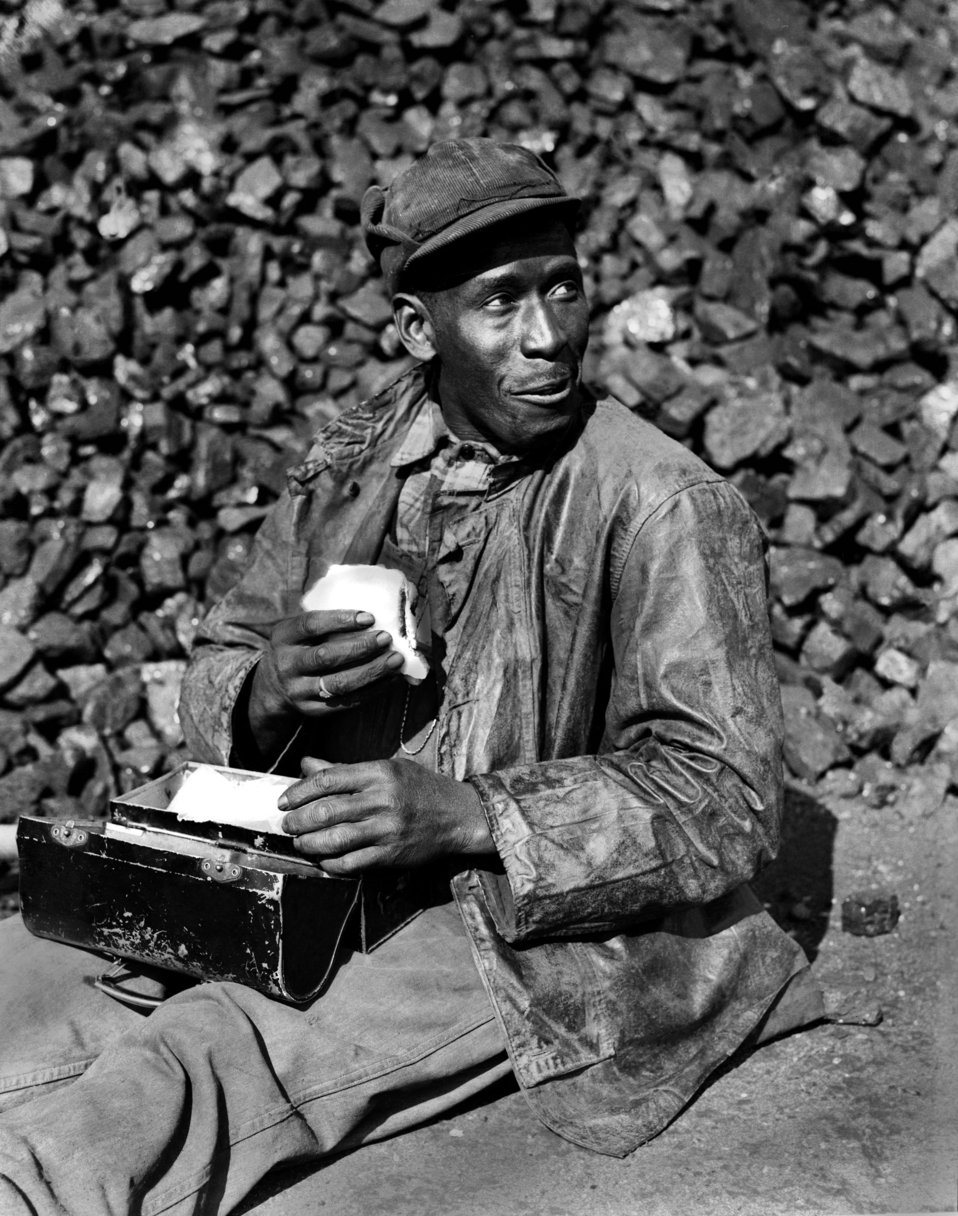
Coal Worker Coal Yard Oak Ridge

PRO-253a DOE photo by Ed Westcott

Coal worker coal yard Oak Ridge Tennessee 1945